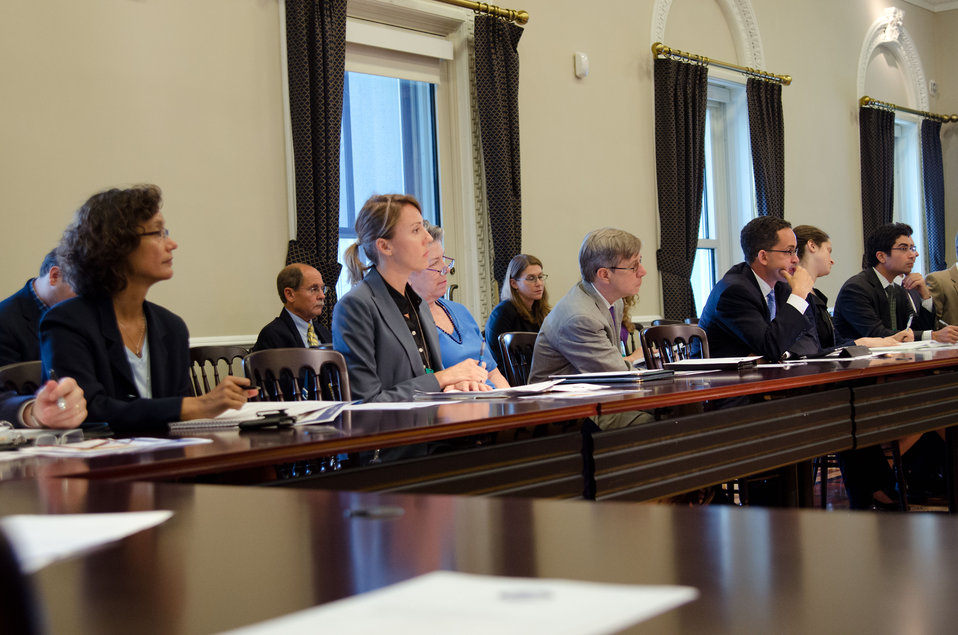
Agriculture Secretary Tom Vilsack chaired a meeting of the White House Rural Council at the Executive Office Building in Washington, D.C. on Friday, July 27, 2012 to update members and stakeholders on the Administration response to the drought and explore ways to assist American farmers and ranchers suffering in its affects.